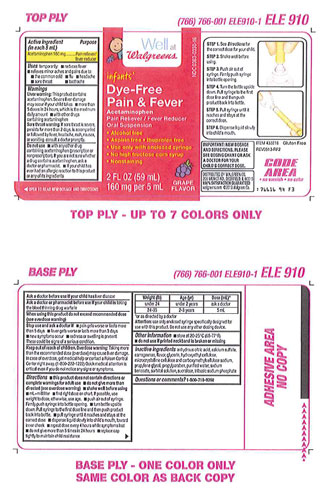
Recalled - Acetaminophen infant suspension liquid

November 1, 2013 – Product Recall – Perrigo Initiates Nationwide Voluntary Product Recall of Acetaminophen Infant Suspension Liquid, 160 Mg/5 Ml, Due to a Potential Defect with the Co-packaged Oral Syringe.